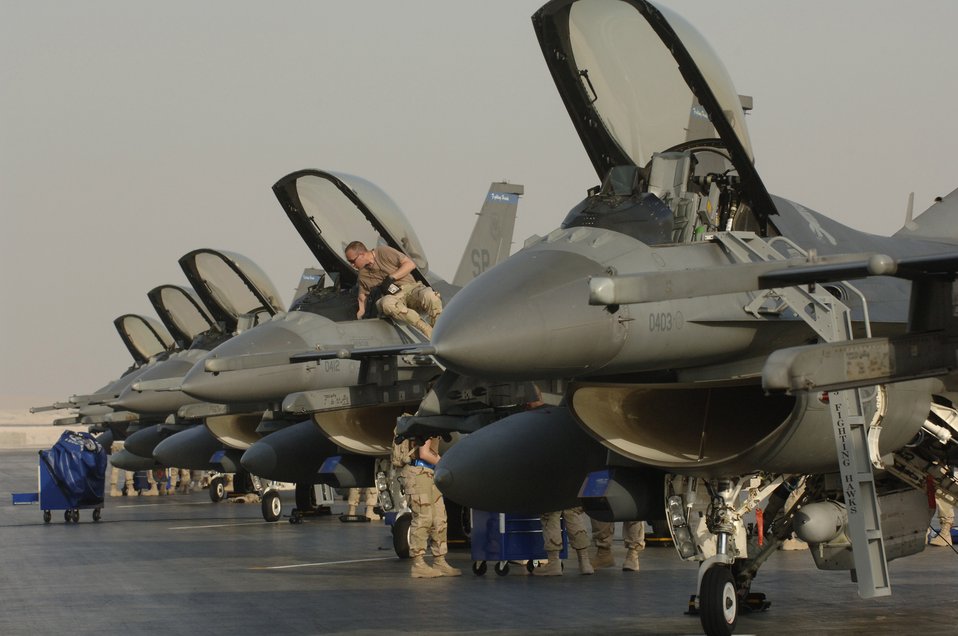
Airpower Summary for June 6, 2007

Maintainers finish up working on F-16 Fighting Falcons June 6 at a base in Southwest Asia. F-16s play a large role in close-air-support missions over Iraq. F-16s flew six close-air-support missions June 6 in support of Operation Iraqi Freedom.